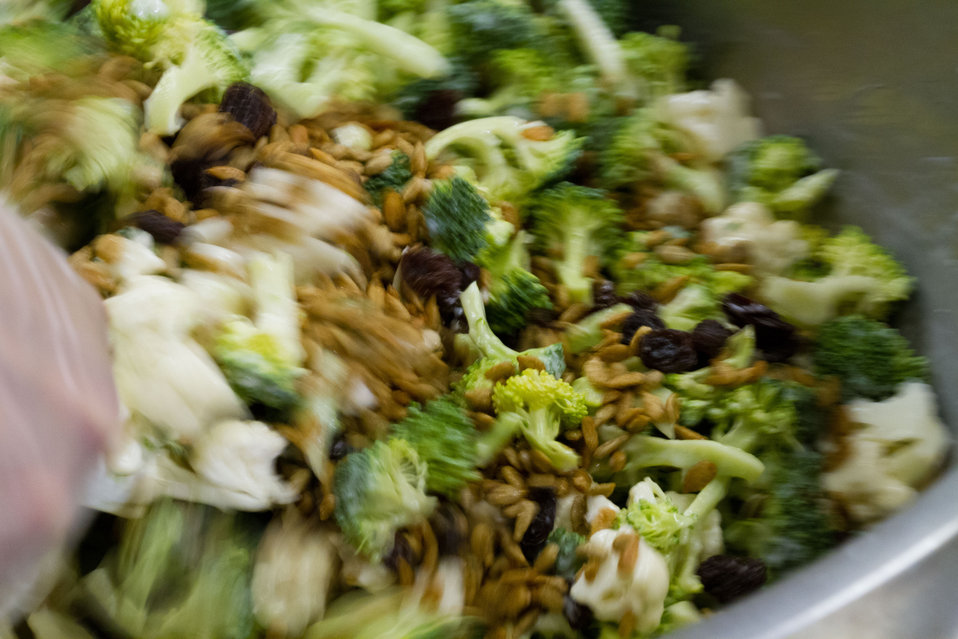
Sunflower seeds are mixed into the sunny broccoli and cauliflower toss that more than 50 students from the 5th grade classes at Yorkshire Elementary School in Manassas, VA., will sample in a taste testing of the new school lunch menu created to meet the new standards. Students tested a sample menu of black-bean filled pizza, pineapple spear, plantain, sunny broccoli and cauliflower toss, and an apple and celery cup with sunbutter dip (a peanut butter substitution), on Wednesday, September 5, 2012.